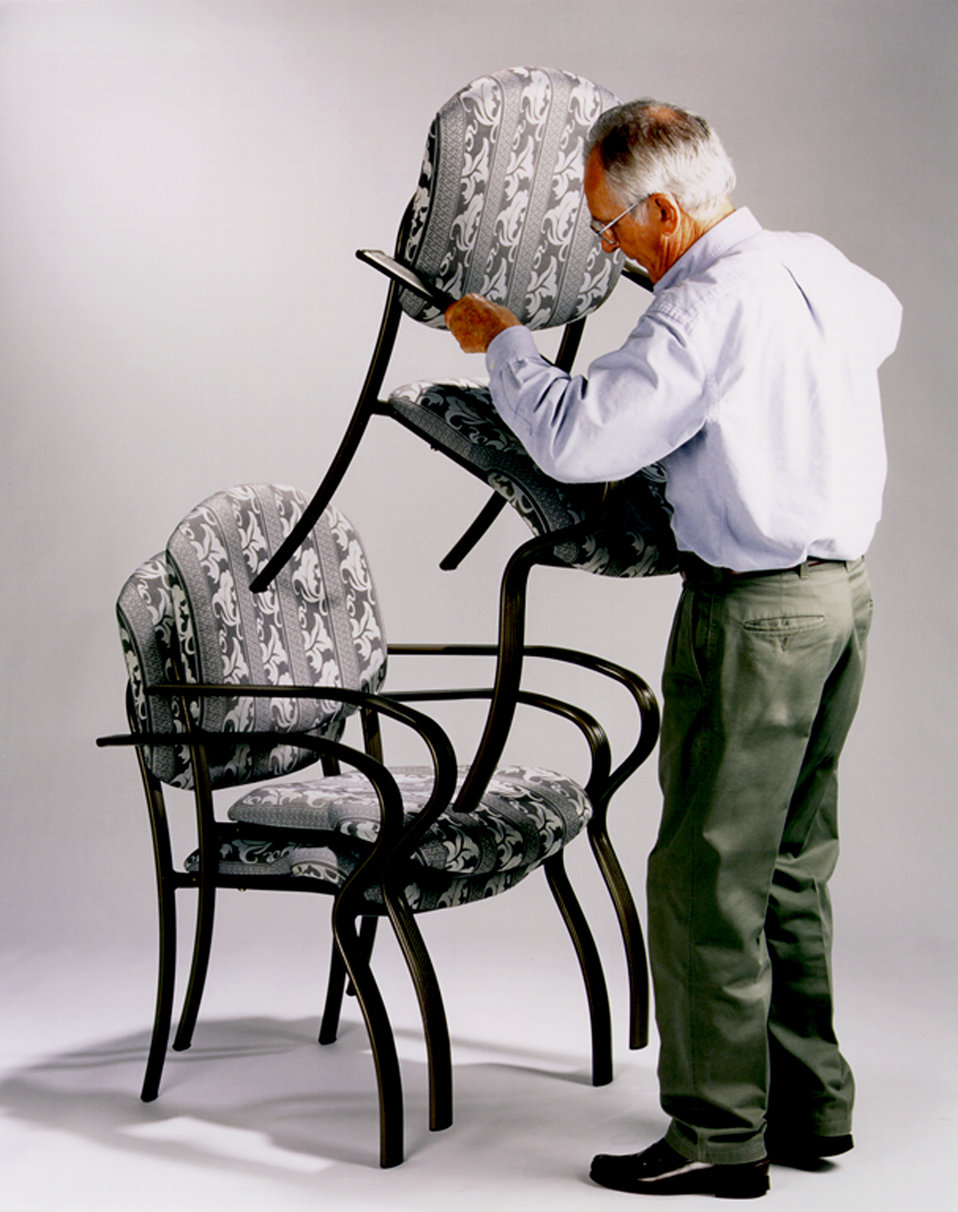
This is one of a series of ten images, (PHIL# 9144 - 9153), depicting one of LifeSpan� Furnishing's line of chairs, designed to make sitting down and rising safer and easier, and sitting more comfortable and supportive. Here, an elderly man was pictured in the act of stacking these chairs showing how easy this activity was to accomplish. These chairs combined aesthetics and function, and were more comfortable for most people, benefiting those who would care for others, by reducing physical exertion and stress needed when assisting others. The user could take advantage of the extended arms for stability when lowering or rising from a seated position. Close attention was paid to many small details including the non-skid rubber feet, and the elimination of pinch points and sharp edges. The LifeSpan� seating product line included four different designs, all based on an extended arm and leg concept that provided users with better leverage and support.